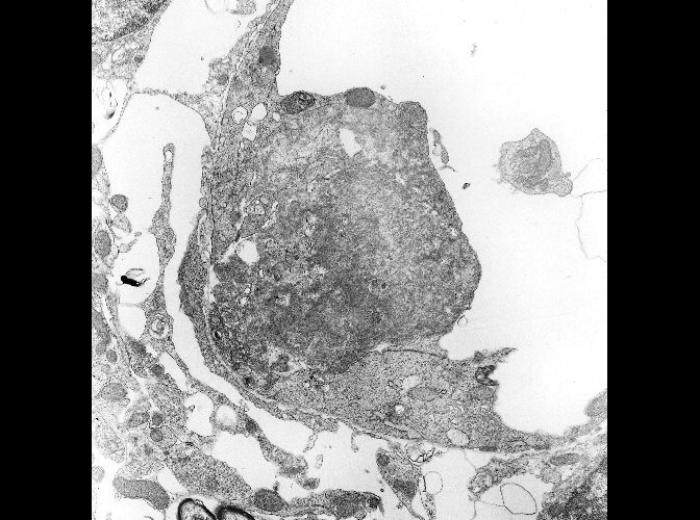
Thrombus due to infection with Rickettsia tsutsugamushi, mouse brain capillary.